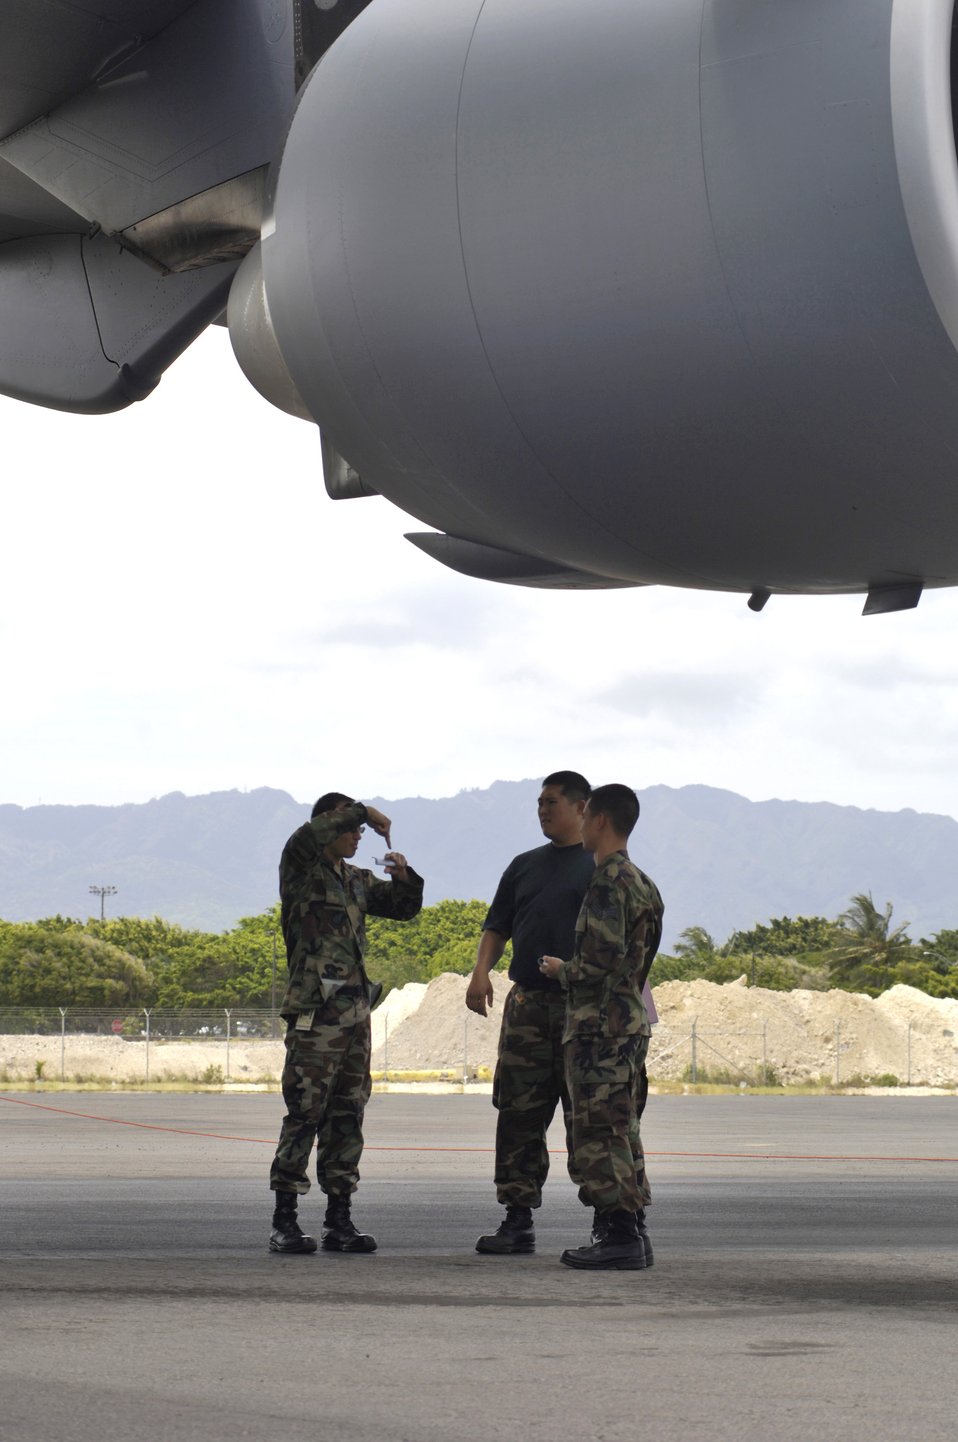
Hickam C-17 crews learn 'Lean' concepts

Airmen from the Hawaii Air National Guard's 154th Maintenance Squadron discuss maintenance procedures for a C-17 Globemaster III at Hickam Air Force Base, Hawaii, on Tuesday, April 11, 2006. Representatives from Boeing are helping the Air National Guard streamline their maintenance processes.